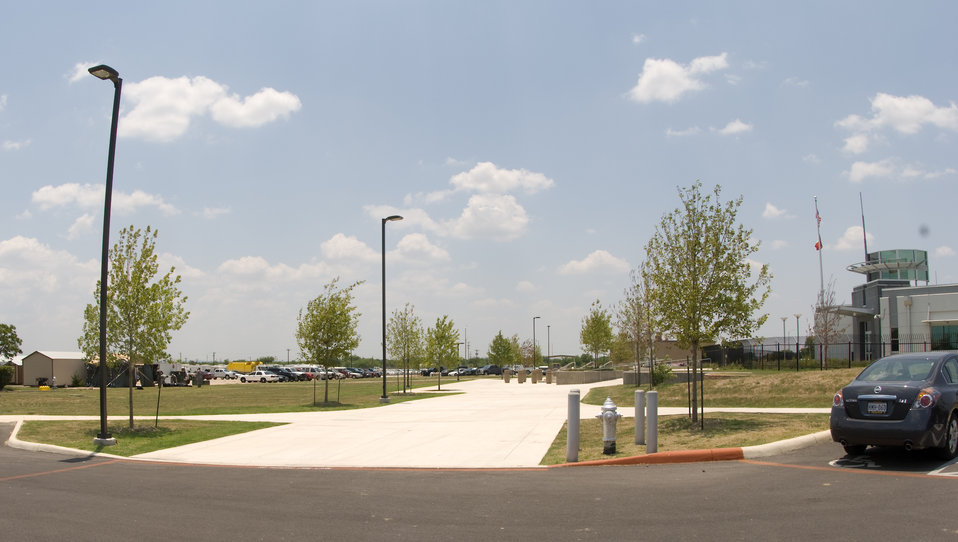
Joint Teams prepare for Hurricane Dolly

Texas Army National Guard and Air National Guard began to set up the Joint Incident Communications Capability (JICC) that will provide video teleconference, satellite and cellular communications on the lawns in front of the Emergency Operations Center at Brooks City-Base in San Antonio July 22. The Texas Army National Guard personnel are part of the Standing Joint Interagency Task Force-Texas at Camp Mabry, Texas. Air National Guardsmen from 149th Communications Flight at Lackland Air Force Base, Texas, also assisted with the setup. Once completed the JICC will provide 2000 sq. ft. of portable or tented floor space on the lawns in front of the EOC.